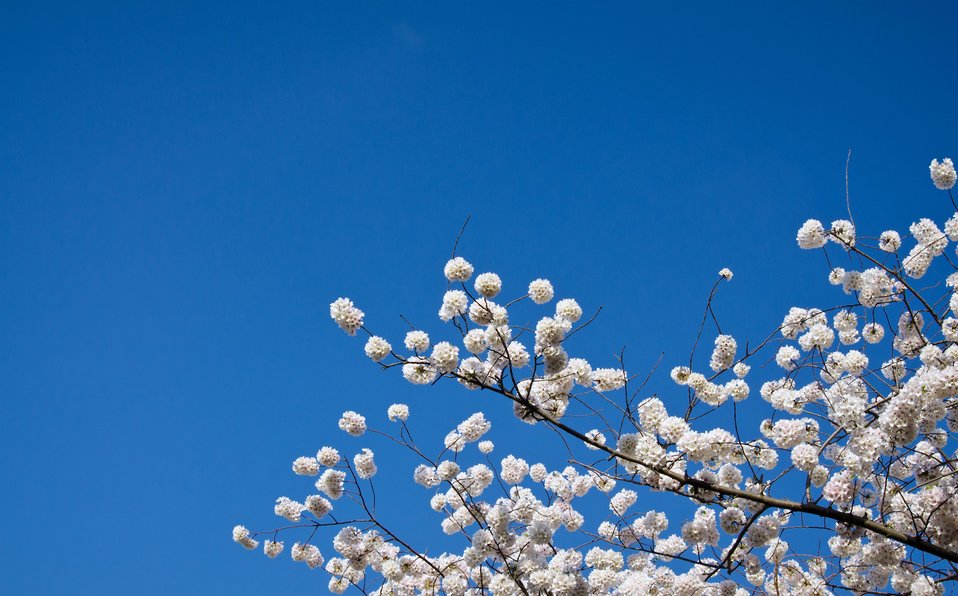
Cherry blossoms at the Tidal Basin in Washington, D.C., on Tuesday, March 20, 2012.